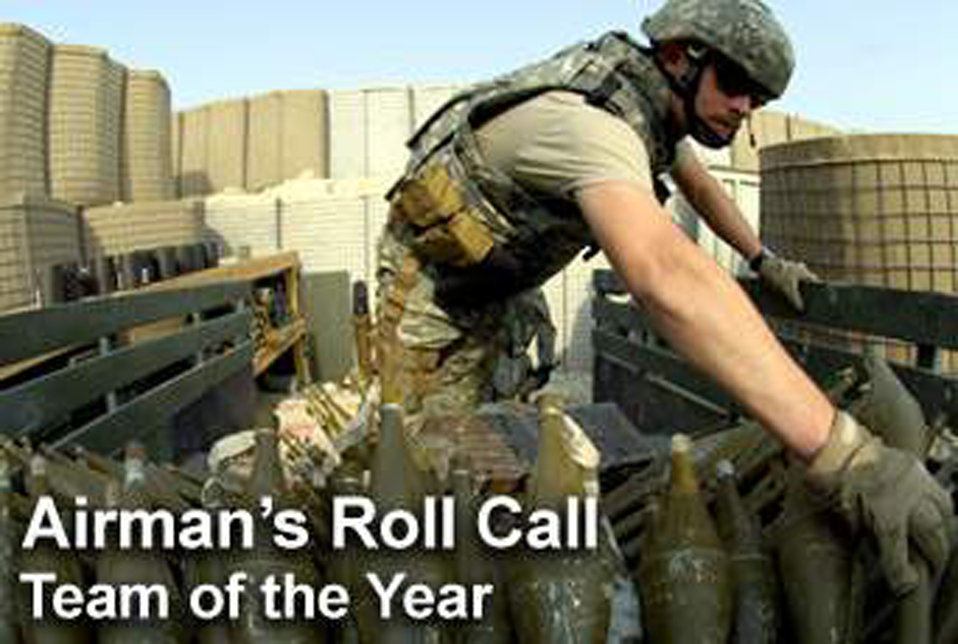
Airman's Roll Call

This week's Airman's Roll Call focuses on the 2009 Air Force Team of the Year. This year's team comprises explosive ordnance disposal Airmen.